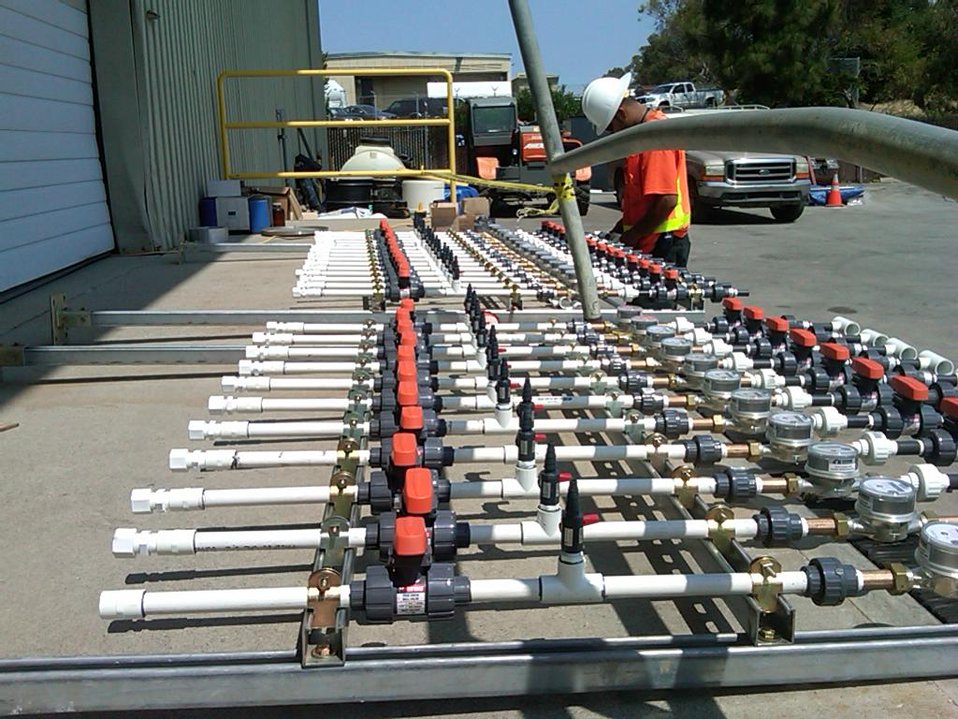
Recovery Act Supports Soil and Debris Cleanup, Groundwater Treatment at SLAC

Recovery Act workers are on track to remove more than 30,000 cubic yards of contaminated soil and debris at the SLAC National Accelerator Laboratory by September 2011.
The Recovery Act invested $14.3 million in legacy cleanup activities at SLAC. In addition to removing contaminated soil and debris that is shipped to local disposal facilities, Recovery Act workers installed three new groundwater treatment systems.